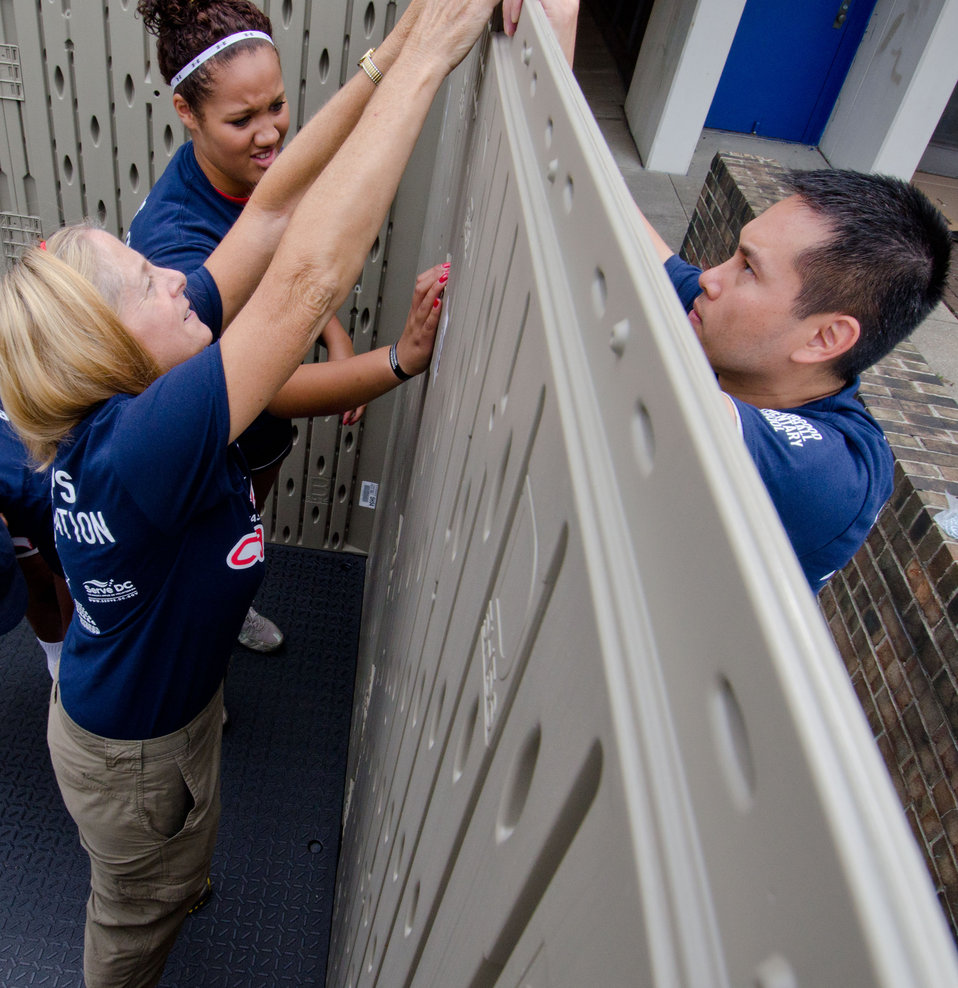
The toolshed assembly team work together align wall panels, during it's construction, when U.S. Department of Agriculture (USDA) People’s Garden Executive Master Gardeners, friends, and family, along with Washington Capitals fans volunteer in District of Columbia Public Schools’ (DCPS) Beautification Day, on Saturday, August 25, 2012, at Thurgood Marshall Elementary School, in Washington, D.C. Each year people are invited to help “spruce up” public school facilities in preparation for the first day of school. More than 70 volunteers pitched in at this large school facility. The People’s Garden effort involves building and painting raised planter boxes, then preparing the soil mixture so they are “ready to grow.” Additionally, a team that includes descendants of U.S. Supreme Court Justice Thurgood Marshall assembles a prefabricated garden toolshed. The Justice’s son, John Marshall leads the team, which includes Brianna the Justice’s great-grand daughter in one of many multi-generational efforts at this school today. Washington Capitals Forward Mike Riberio, his family and mascot Slapshot participated in every project underway at Marshall School. From the outside gardens, to inside murals, and robotics worktable construction, the teams made their goals.